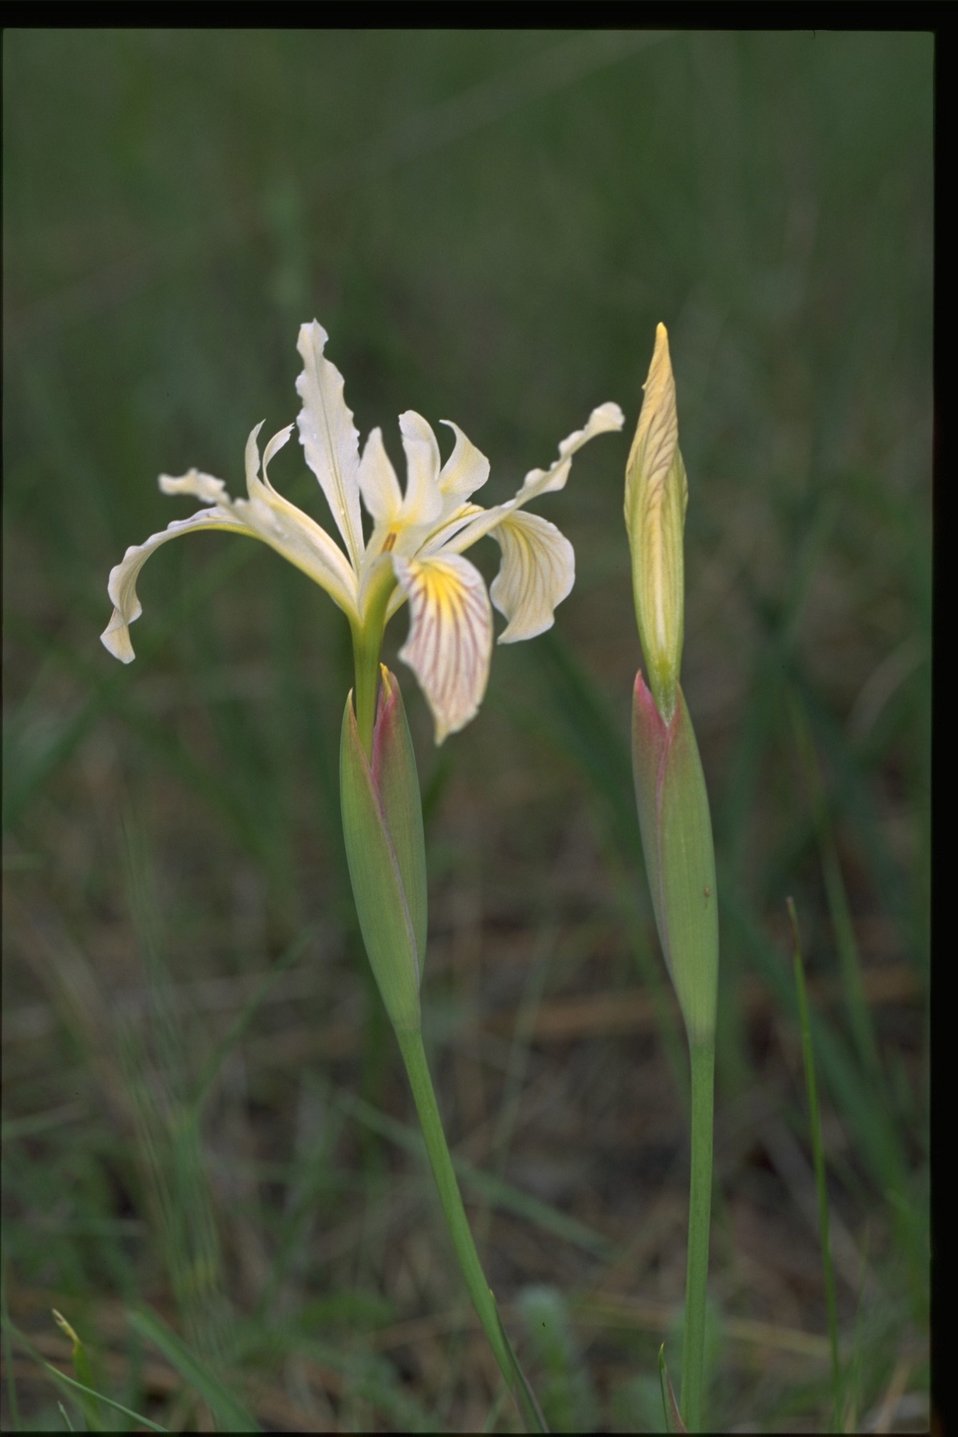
Medium shot of Yellow leaved iris, Iris chrysophylla.